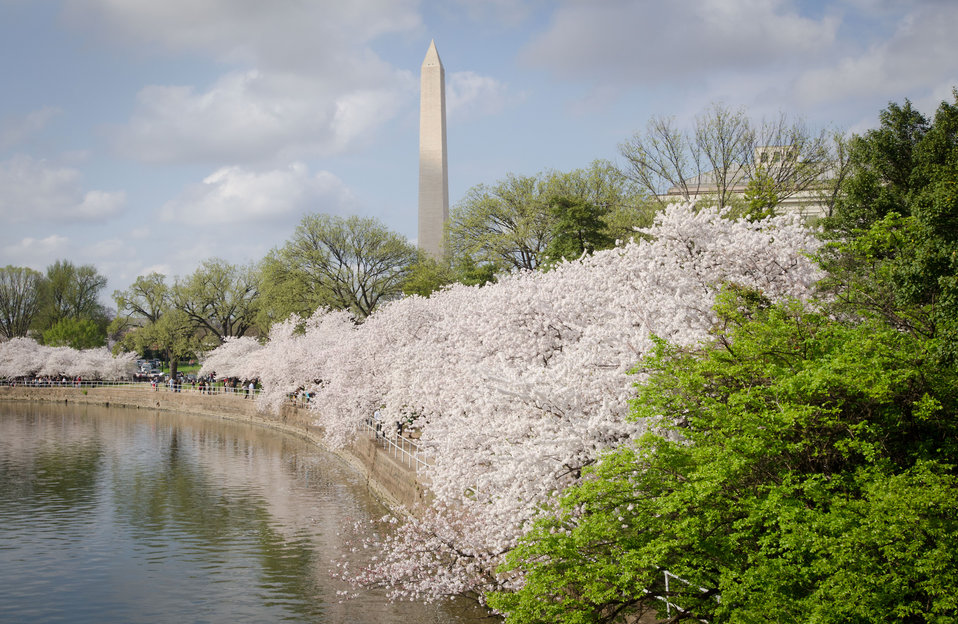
Cherry blossoms at the Tidal Basin in Washington, D.C., on Tuesday, March 20, 2012.